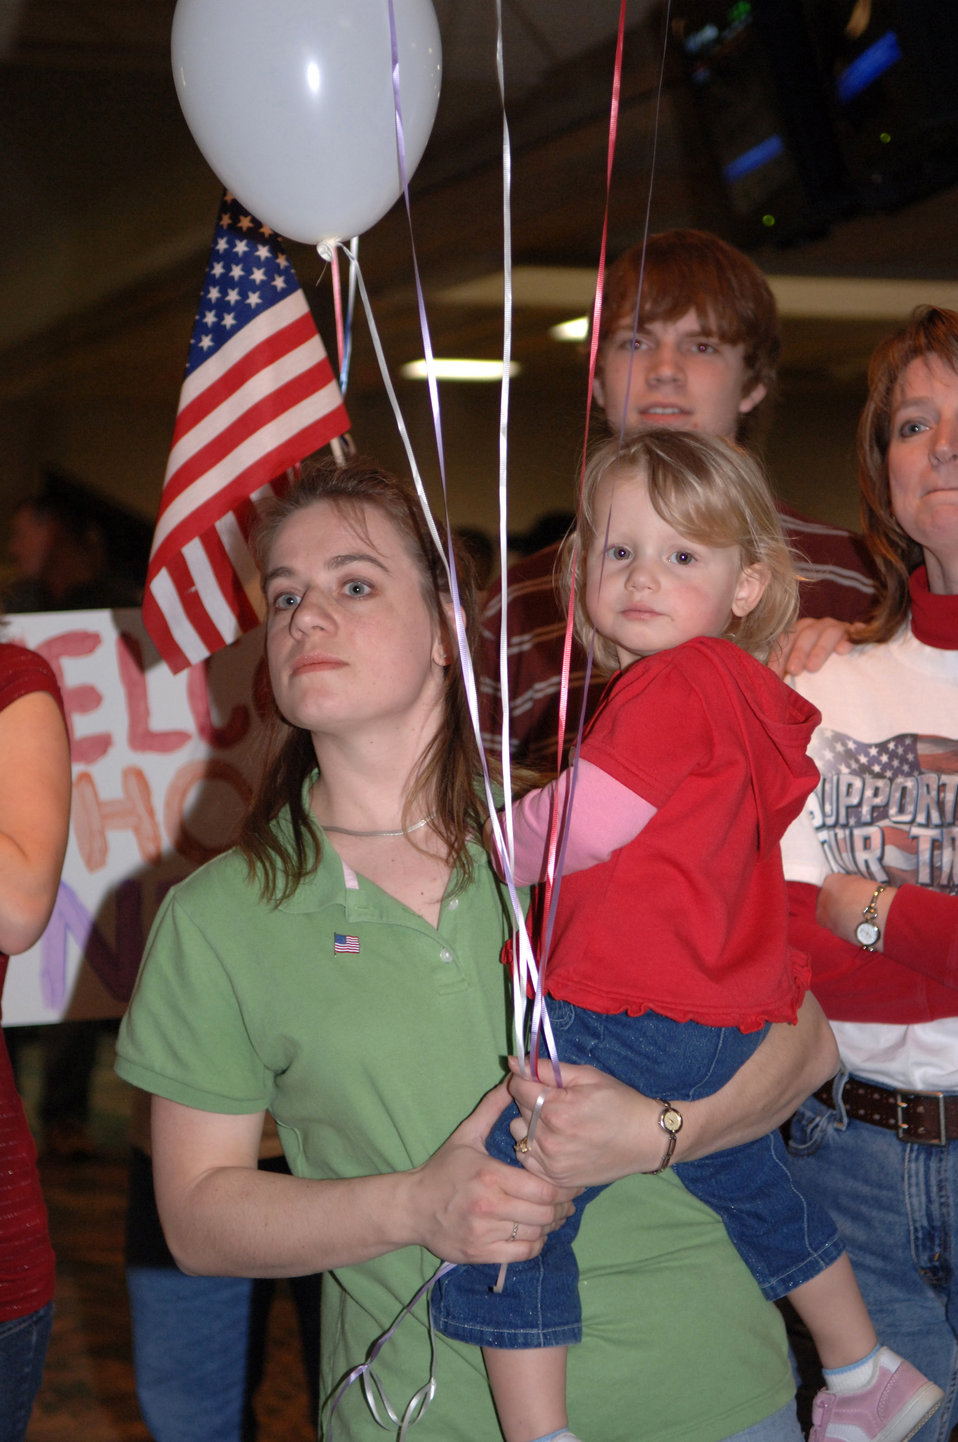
Welcome home to South Dakota

Gretta Hackman and family wait anxiously for the return of their loved one at Rapid City Regional Airport March 21. Airmen from the 28th Security Forces Squadron at Ellsworth Air Force Base, S.D., returned from a deployment to Southwest Asia in support of operations Iraqi Freedom and Enduring Freedom.